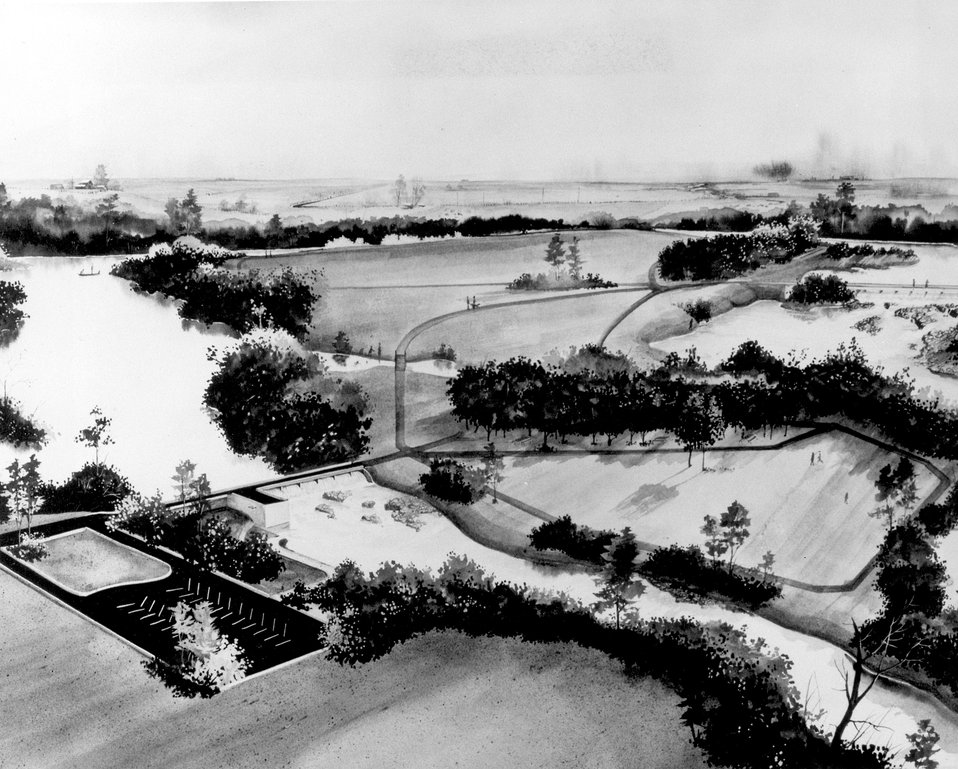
This artist's concept shows the proposed low-head hydropower installation of a modern 7.2 MW bulb turbine at the existing upper dam site on the Snake River, Idaho Falls, Idaho. c. 1978